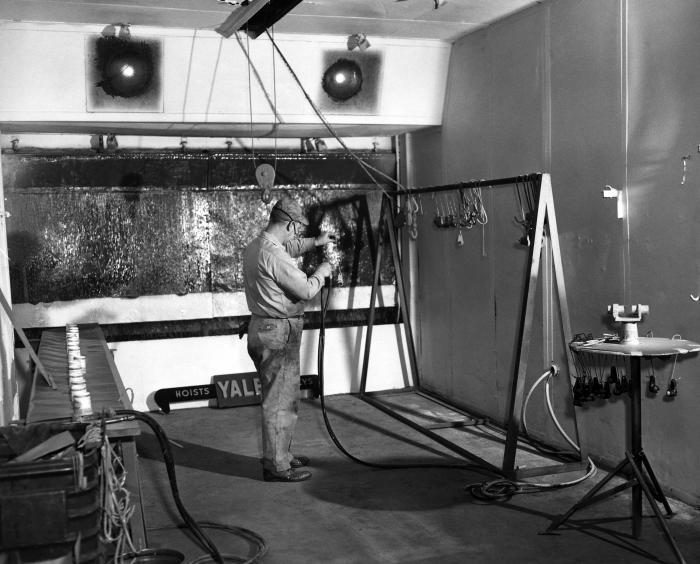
This historic image, provided by the Center for Disease Control's (CDC), National Institute for Occupational Safety and Health (NIOSH), depicted an inductrial worker inside a Yale Towne Mfg. Co. paint spray booth. The worker appeared to be adjusting a pneumatic paint gun, while wearing an appropriate facial breathing device. Though technologic advancements made many of the formerly manual tasks easier, and faster, the potential dangers lurking inside such a factory, still mandated, and mandates even today, the adherence to strict protocols in order to create a safer working environment.In gaining a better understanding of workplace hazards, through hands-on and on-site information acquisition, protocol-formulating bodies such as NIOSH, are better able to create a safer workplace through substantiation of appropriate safety regulations,